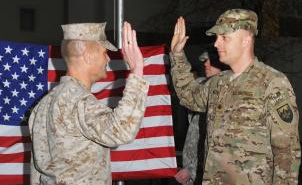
Family Tradition

Maj. Mark Melin, right, renews his commissioning oath at a ceremony marking his promotion to major in Kabul, Afghanistan, April 1, 2012.